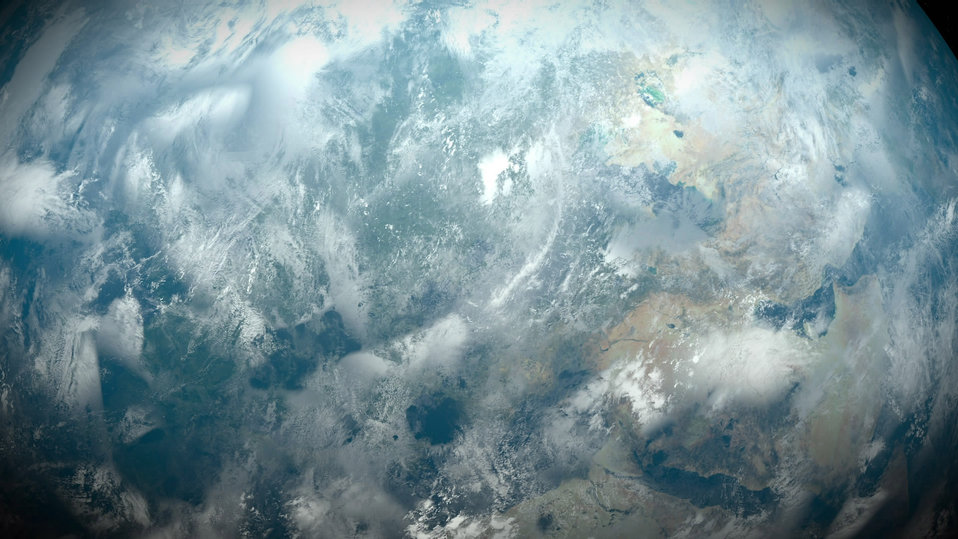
Closer to the earth's atmosphere

Approach to the globe and the earth's atmosphere.